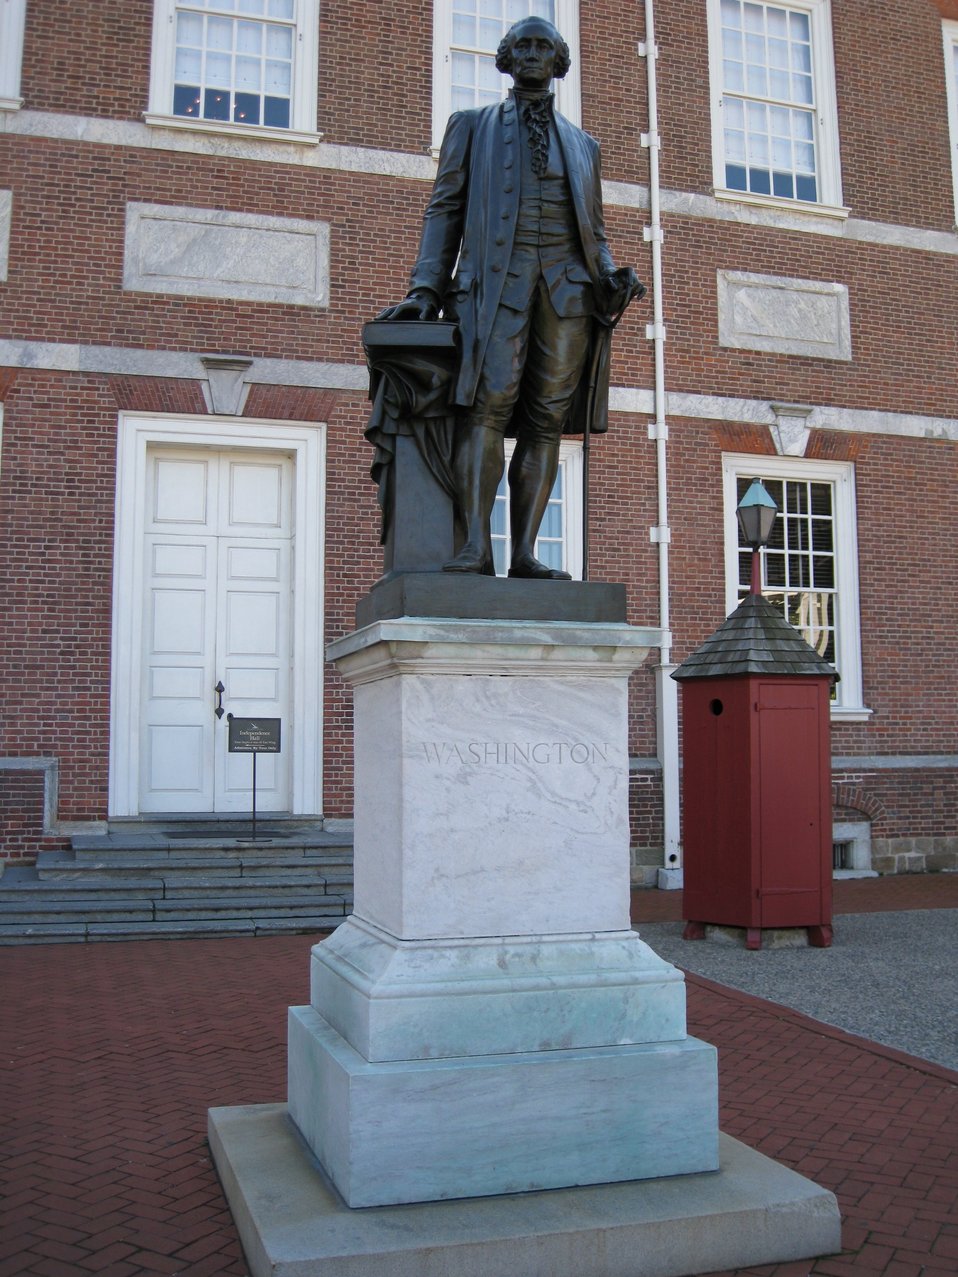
Gravestone of Benjamin and Deborah Franklin at cemetery at Independence National Historic Park. 'A penny saved is a penny earned.'